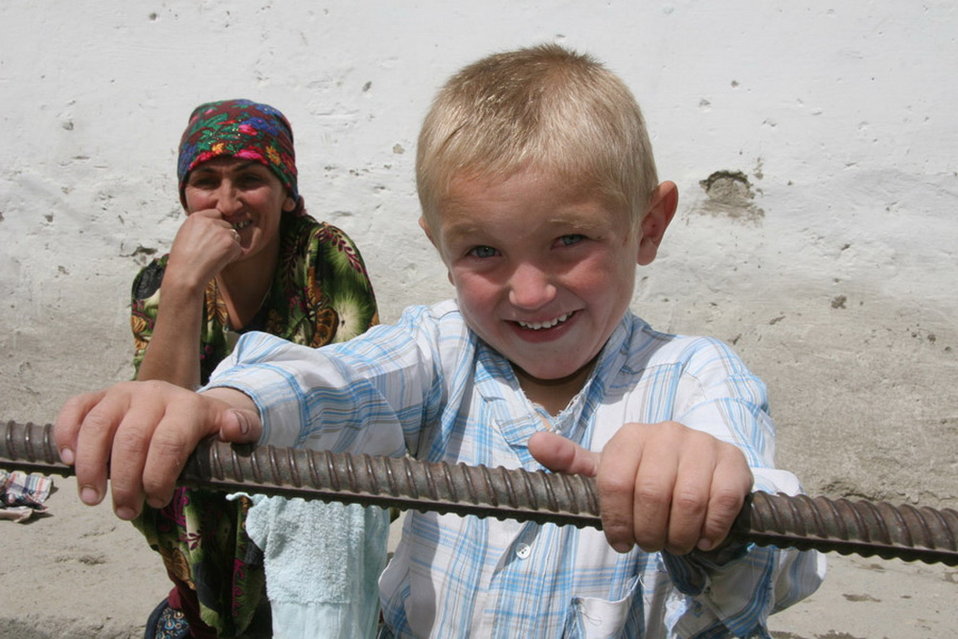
Pamiri Tajiks